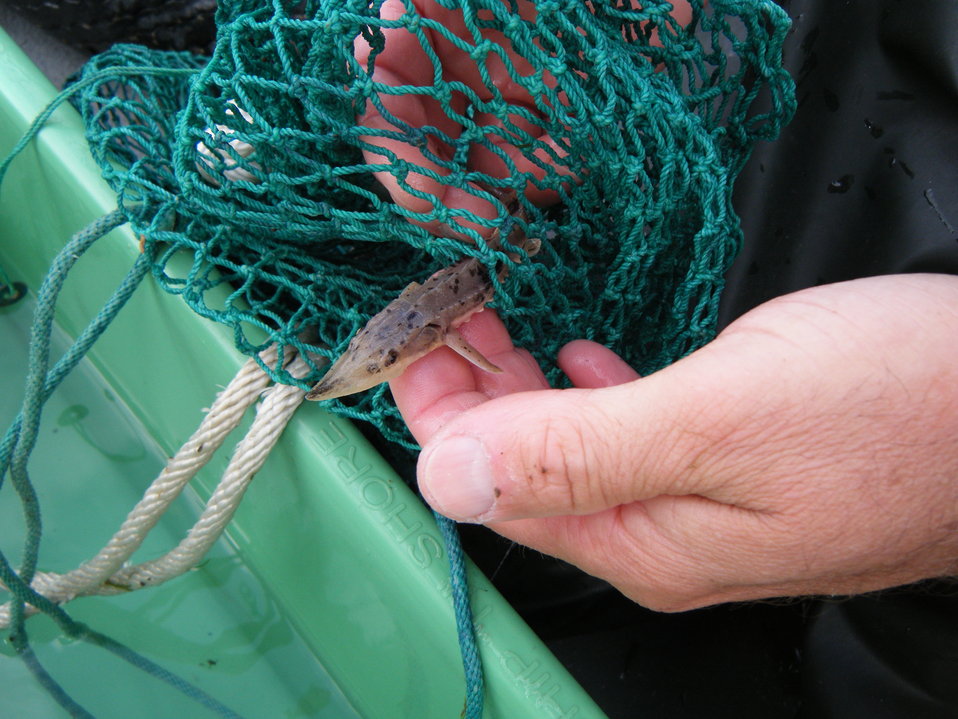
Lake Sturgeon

Young-of-year lake sturgeon captured in a bottom trawl in the lower St. Clair River.